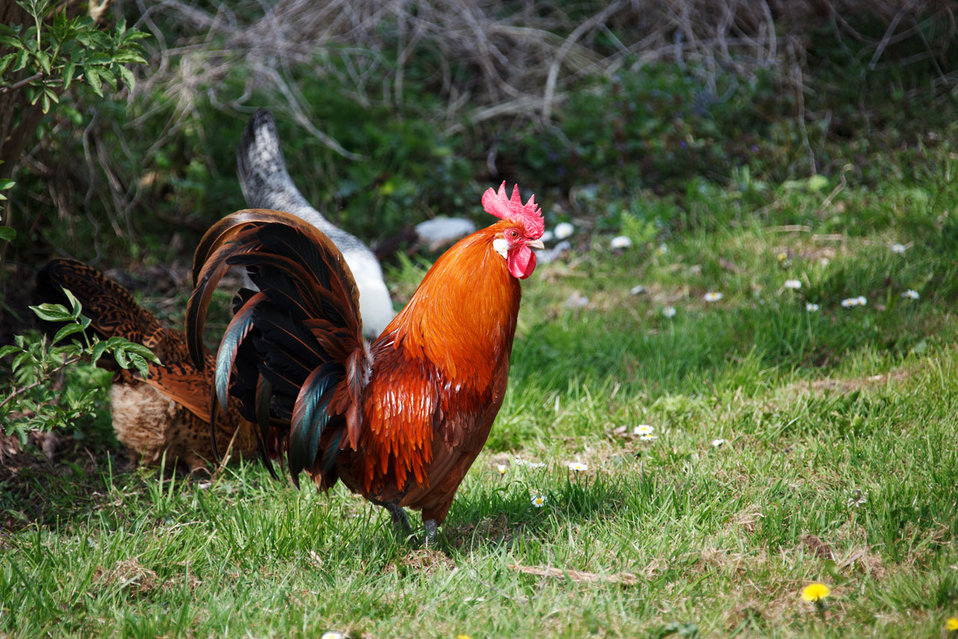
Rooster

Elegant and colourful rooster on the grass.